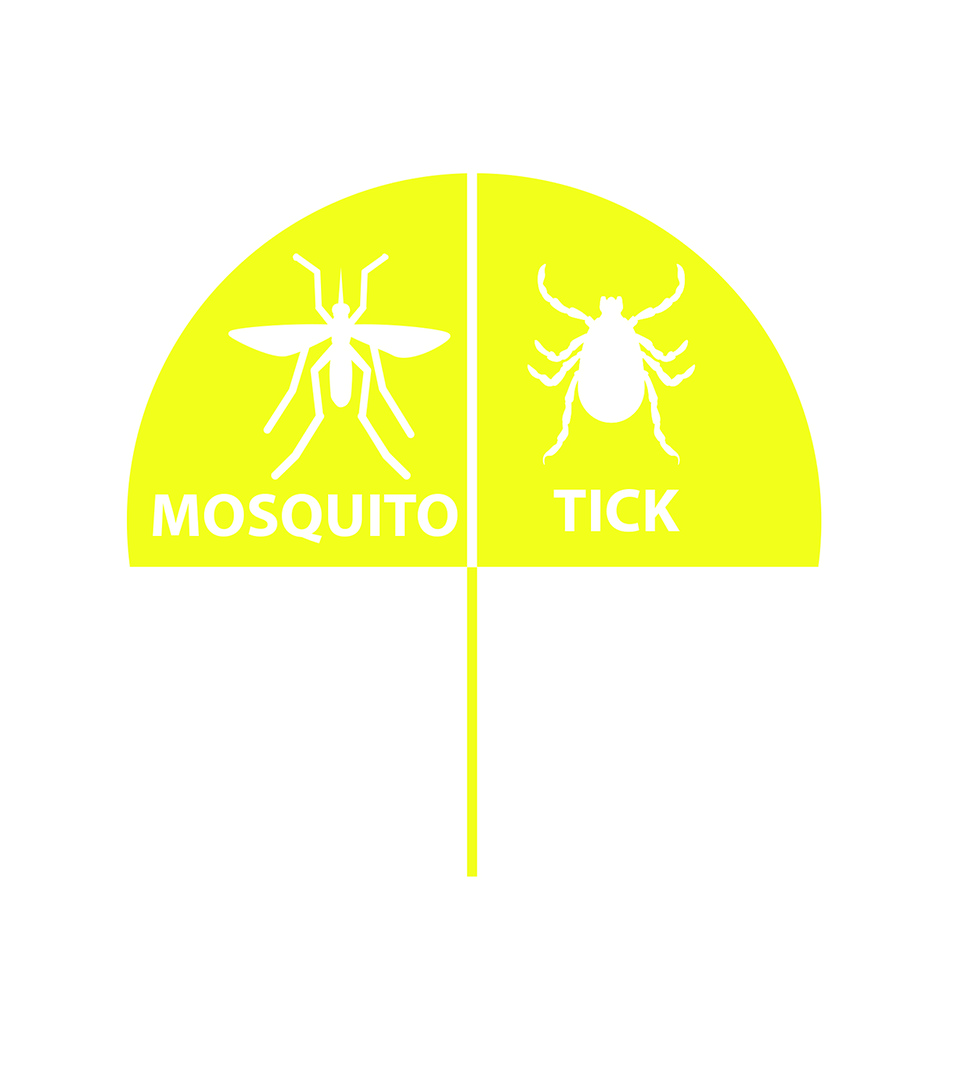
Proposed Insect Repellent Graphic

We're looking for a new way to help you pick an insect repellent to keep mosquitoes and ticks away. Does this proposed image tell you how many hours a product works? Companies will be able to put the final image on product labels. Let us know what you think!